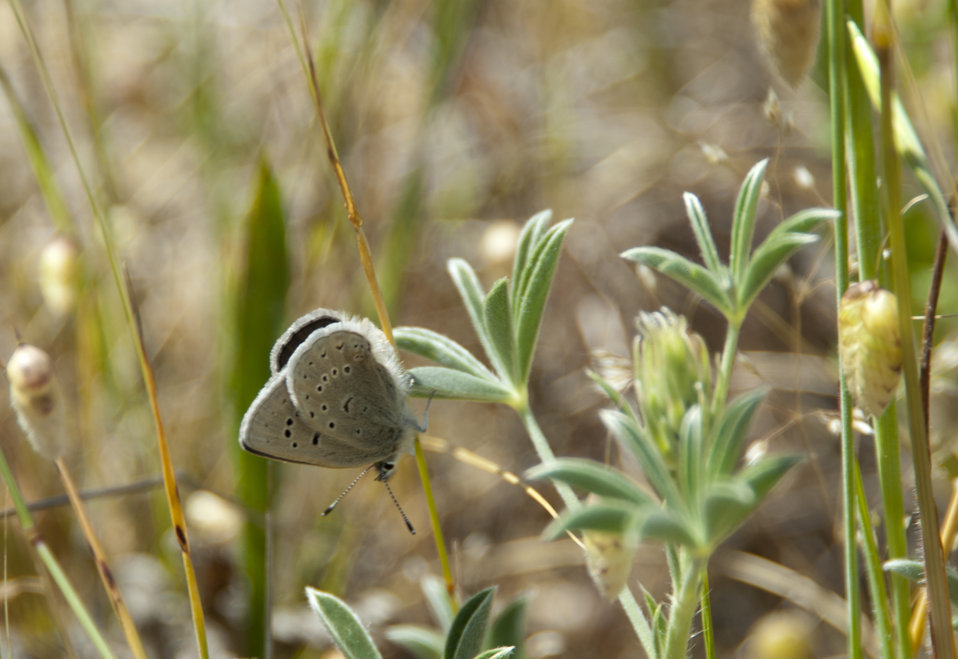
Mission Blue Butterfly-female

photo credit - Sarah Swenty/USFWS
The endangered Mission blue butterfly (Icaricia icarioides missionensis) is a small, delicate butterfly with a wingspan of about 1 to 1.5 inches.